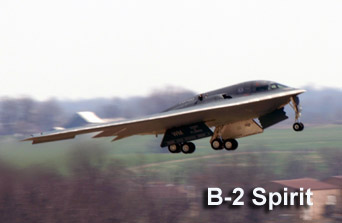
B-2 Spirit

Col. Tom Bussiere and Maj. Rich Collins take off in a B-2 Spirit named the Spirit of Florida April 15, 2008, at Whiteman Air Force Base, Mo. Colonel Bussiere is the 509th Operations Group commander, and Major Collins is the 394th Combat Training Squadron operations officer.